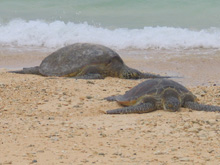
Green Turtles - Kilauea Point NWR

Though you may see green turtles at Kilauea Point NWR on Kaua'i Island, typically they can be seen more often at their nesting grounds on the northwest islands of Hawaii.